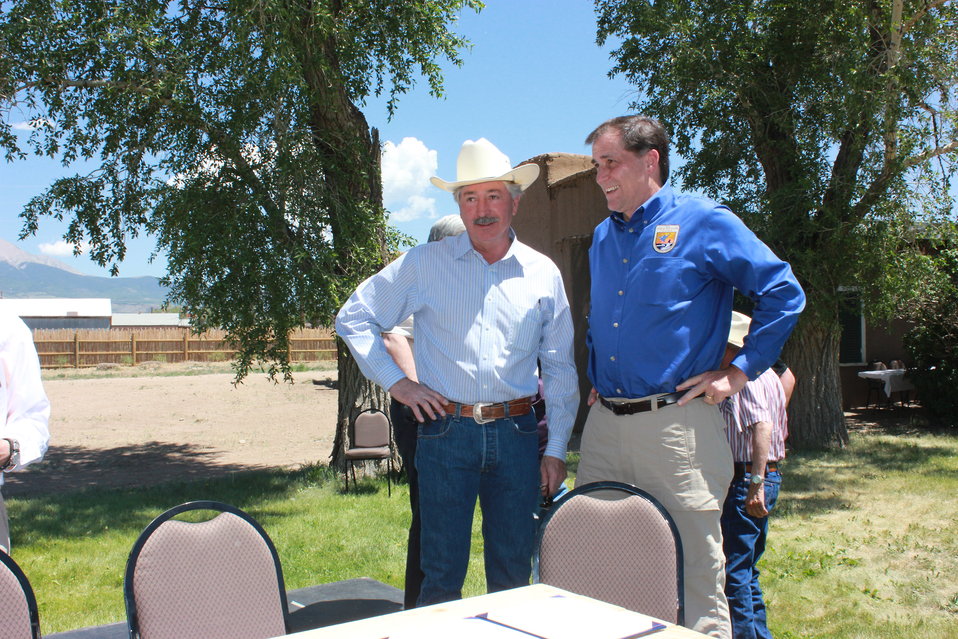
Historic Conservation Easement in Sangre de Cristo Mountains